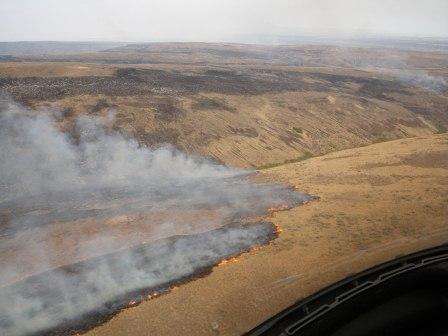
The Colockum Tarps Fire southwest of Malaga, WA began on Jul. 27, 2013 is under investigation. The fire has consumed approximately 70,000 acres and is approximately 25% contained.